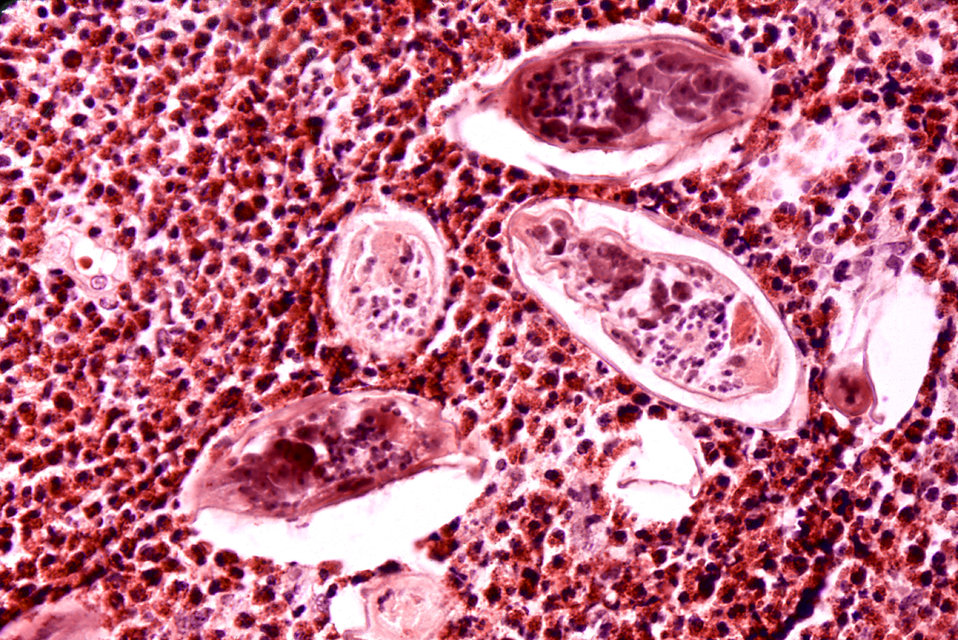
Histopathology of schistosomiasis haematobia, bladder